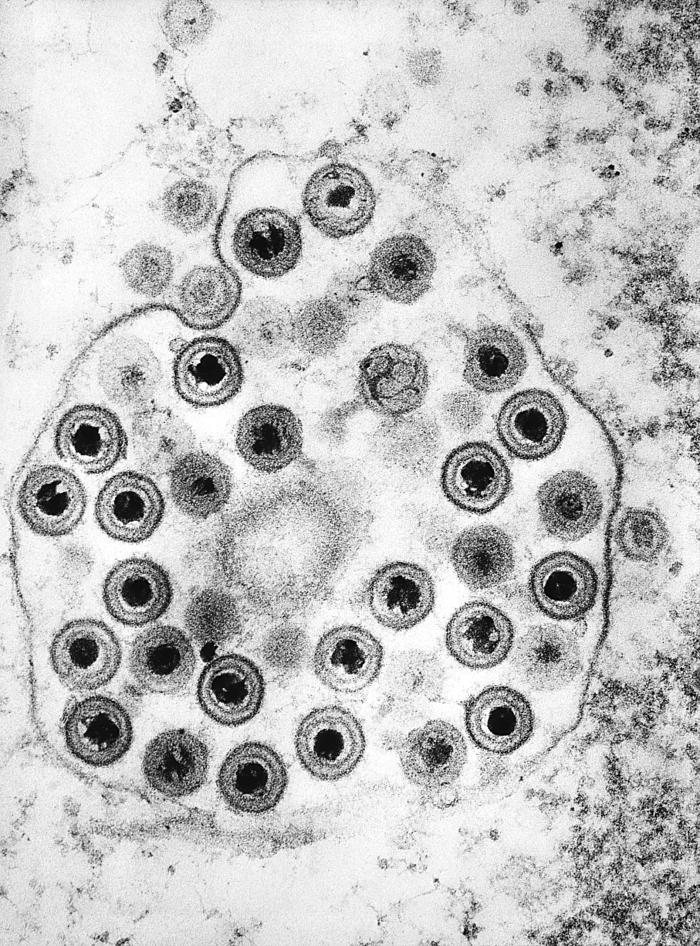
This negatively-stained transmission electron micrograph (TEM) revealed the presence of numerous herpes simplex virions, members of the Herpesviridae virus family. There are two strains of the herpes simplex virus, HSV-1, which is responsible for cold sores, and HSV-2, which is responsible for genital herpes. At the core of its icosahedral proteinaceous capsid, the HSV contains a double-stranded DNA linear genome.